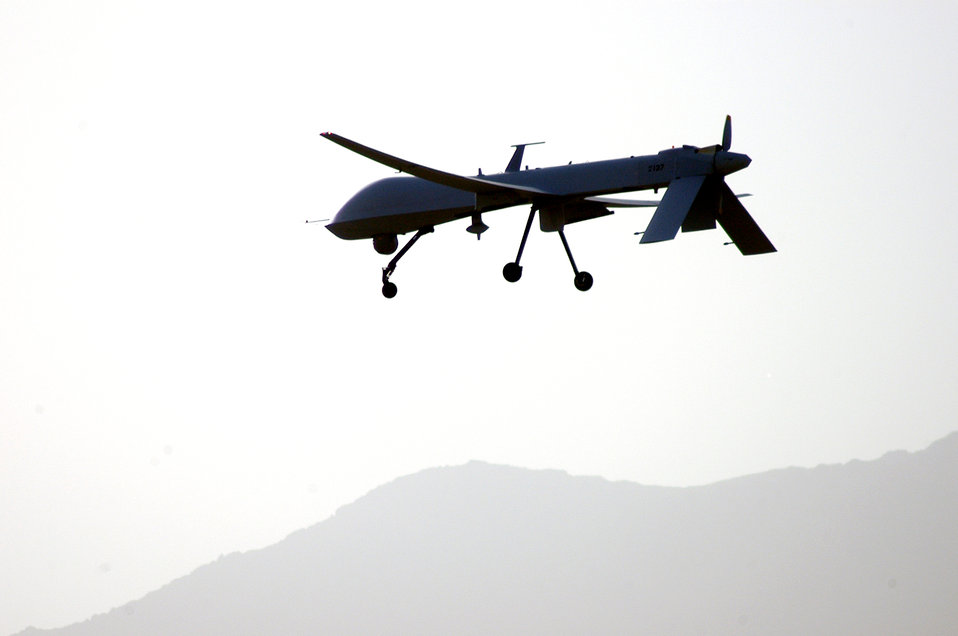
Predators provide eyes in the sky over Afghanistan

An Air Force MQ-1 Predator prepares to land Kandahar Airfield, Afghanistan, on Friday, June 2, 2006. The 62nd Expeditionary Reconnaissance Flight provides the launch and recovery element for all Predator missions in support of Operation Enduring Freedom.